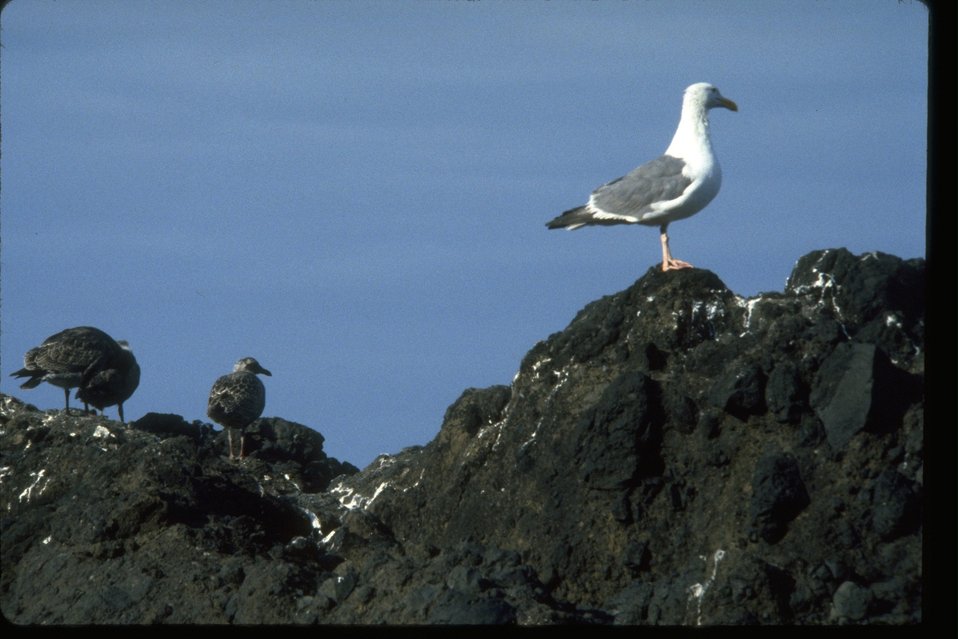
Western Gull with immature Gulls near Yaquina Head.